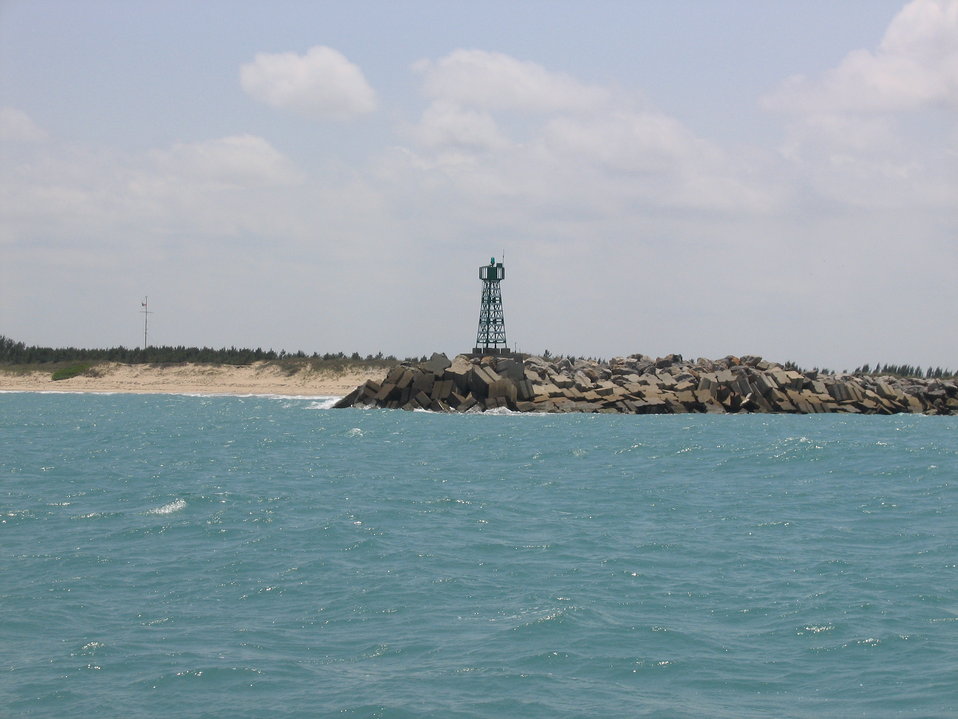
Breakwater beacon off entrance to Tampico Harbor.